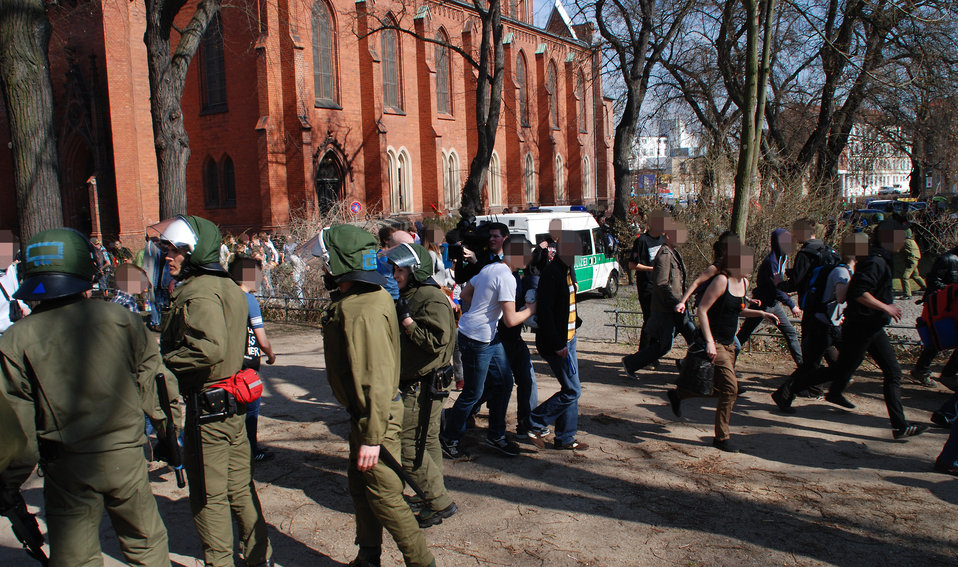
Proteste gegen den Nazi-Aufmarsch am 24.3.2012 in Frankfurt (Oder)